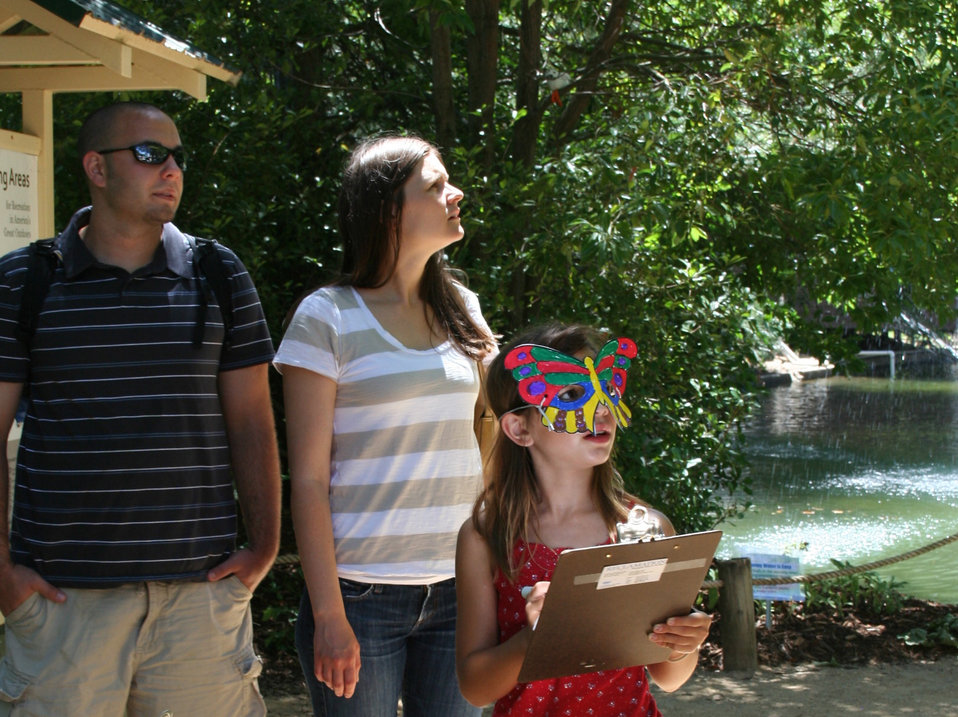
Bird bingo area at the DOI booth

For the first time DOI agencies [US Fish and Wildlife Service, Bureau of Reclamation and Bureau of Land Management] joined together to host an America's Great Outdoors Booth at the California State Fair in Sacramento, Calif., July 14 - 31.

The booth included informational panels and displays as well as a children's activity area. Activities: wildlife masks, temporary tattoos, water-cycle bracelets, fish prints, touch boxes, scat bingo, a green-screen, coloring and bird bingo. Five days a week live raptors, snakes and bats were brought in.

About 50,000 children visitied the booth during the 18-day fair.